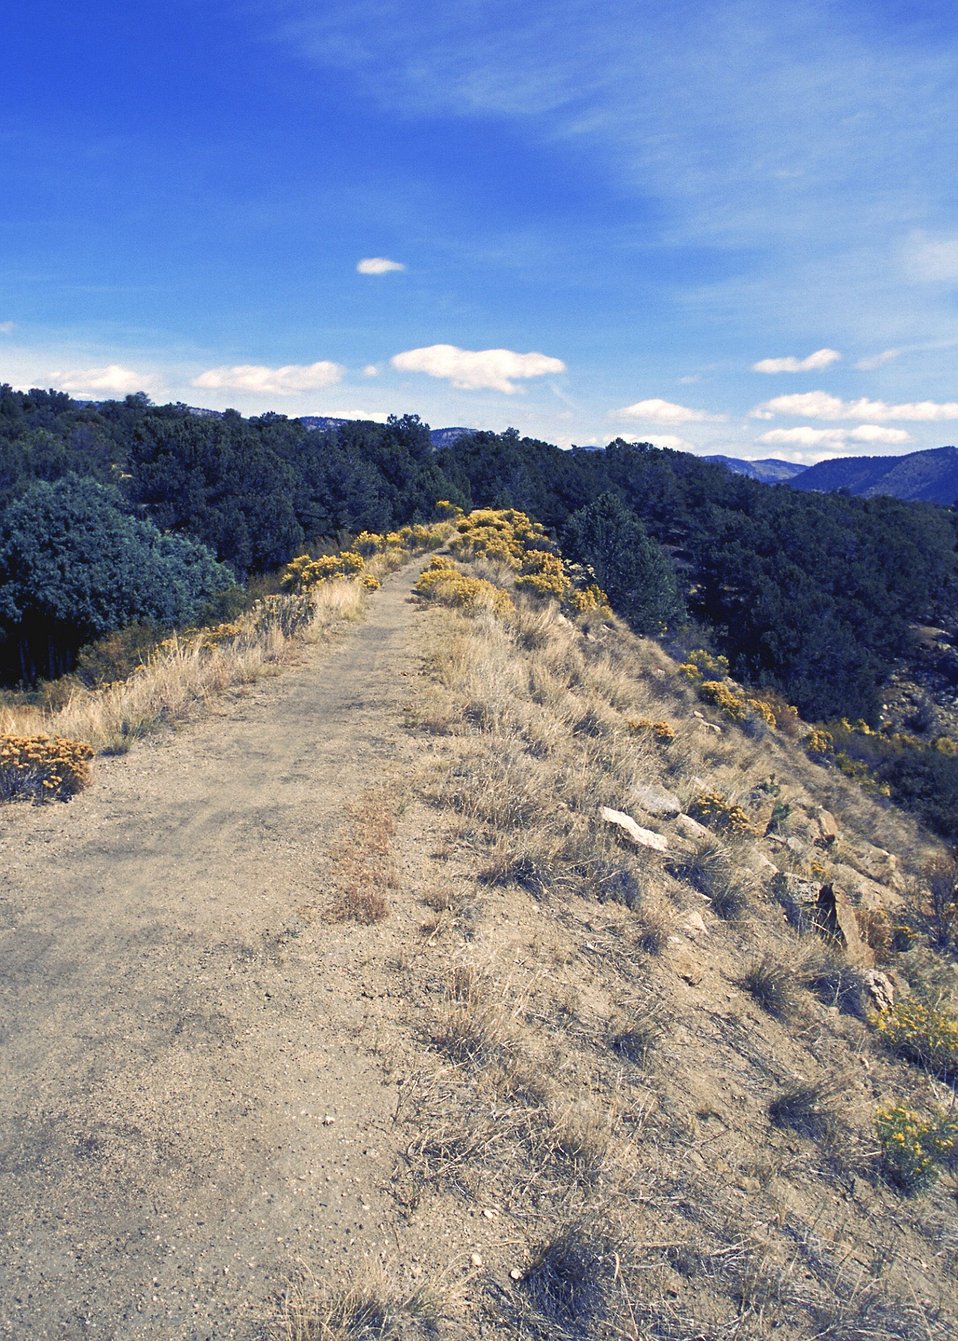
Midland RR Trial